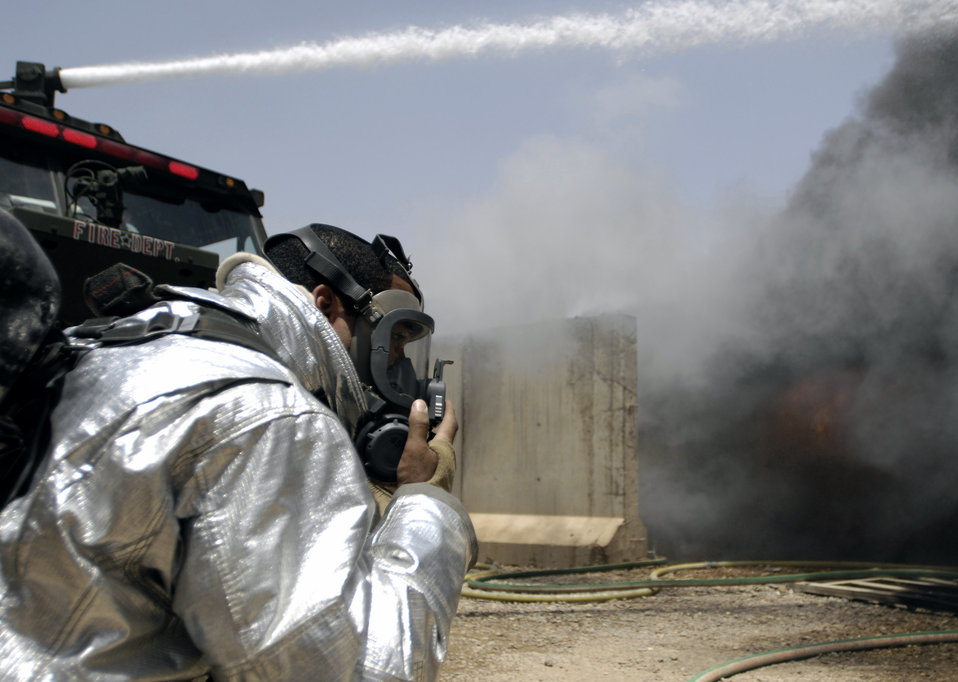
AF, Army firefighters

Airman 1st Class Zachary Auxilly dons protective gear as he prepares to fight a blaze July 22 at Joint Base Balad, Iraq. Air Force and Army firefighters teamed up to contain the two-alarm fire, limiting the damage to six closely situated buildings. No one was injured in the fire, although three firefighters were treated for heat stress-related conditions and released. Airman Auxilly is deployed from Misawa Air Base, Japan.